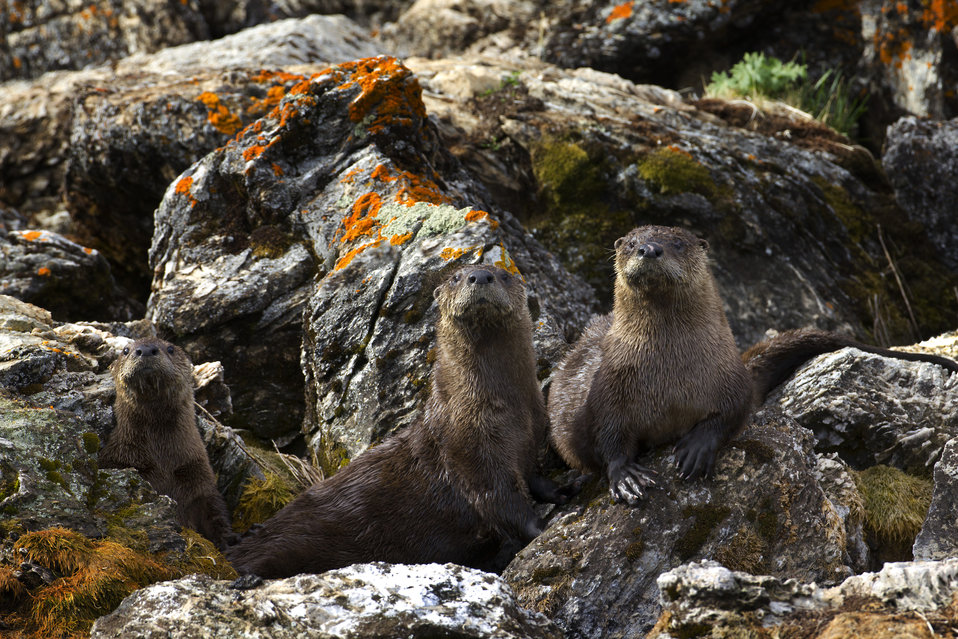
12th Place - American River Otters

American River Otters at Picnic Springs on Culver Pond at the Red Rock Lakes National Wildlife Refuge.

Credit: James 'Newt' Perdue / USFWS

Photo Contest Entry #132